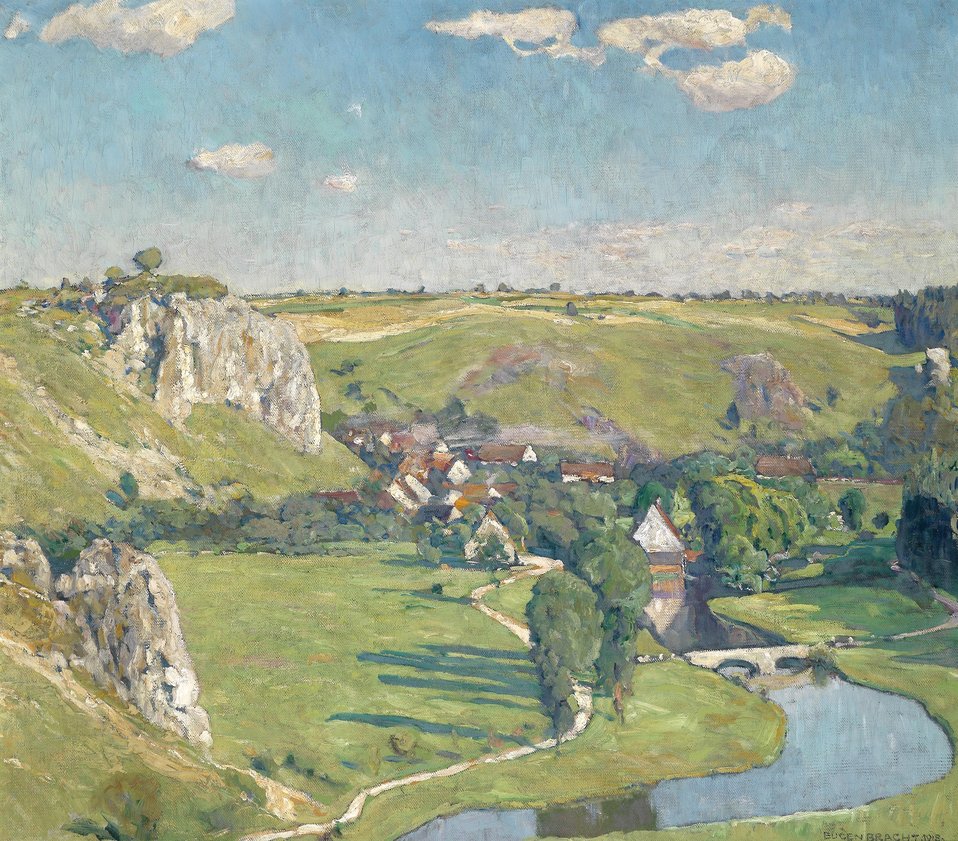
'Schwäbisches Dorf', rückseitig betitelt und mit Nummer 1718 bezeichnet, signiert, datiert Eugen Bracht 1918, Öl auf Leinwand, 80 x 90 cm